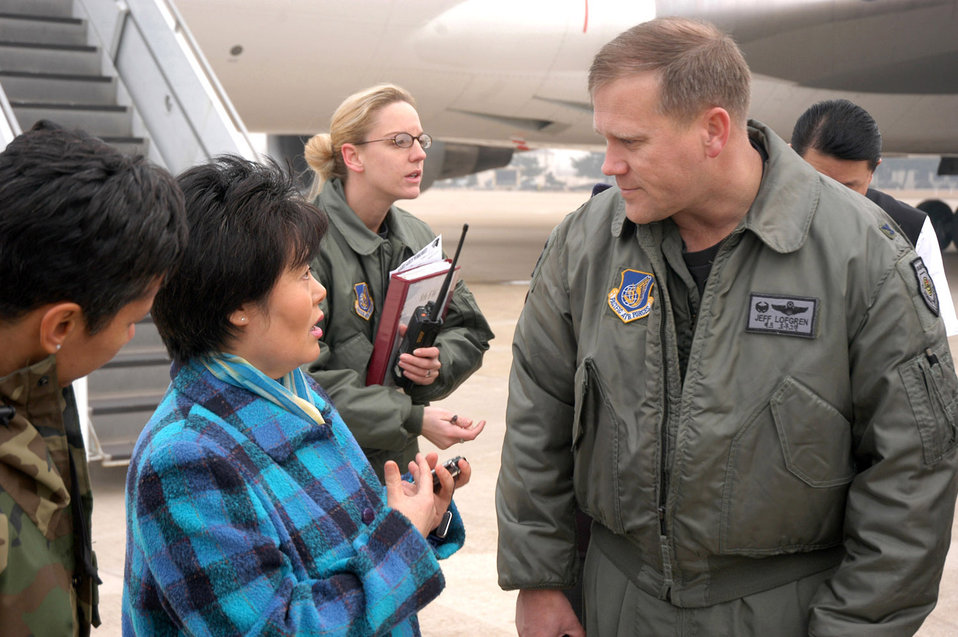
Two Korean Airline jets divert to Kunsan

Col. Jeff Lofgren, 8th Fighter Wing commander, talks with airfield operations personnel after two Korean Airline 747s diverted to Kunsan Air Base, South Korea, from Incheon International Airport because of foggy weather conditions. Medical and security personnel also responded to the aircraft.